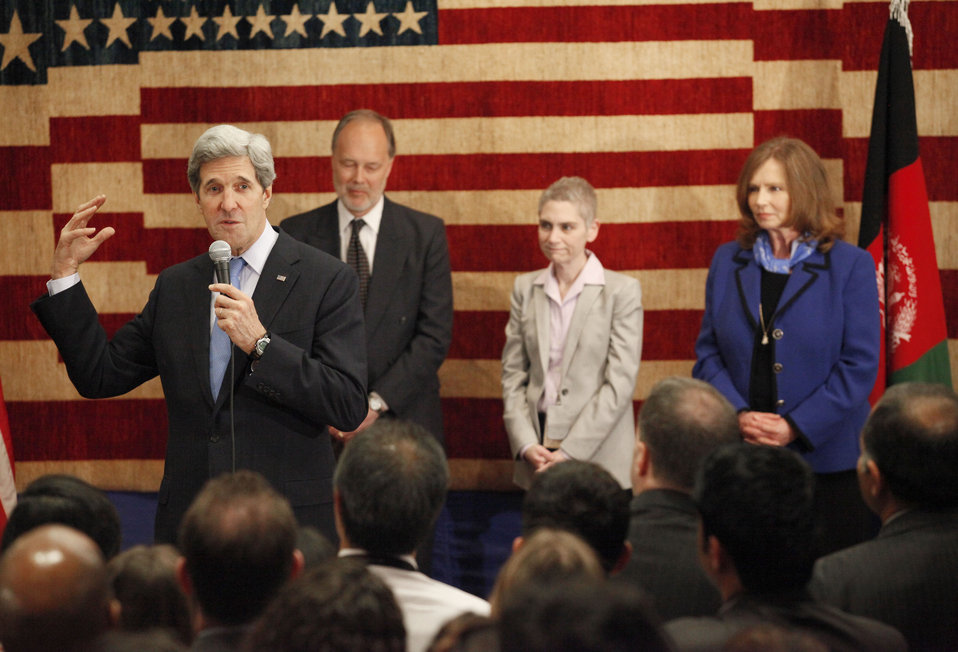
Secretary Kerry Speaks to U.S. Embassy Kabul Staff and Families

U.S. Secretary of State John Kerry speaks to U.S Embassy Kabul staff and families in Kabul, Afghanistan on March 26, 2013.